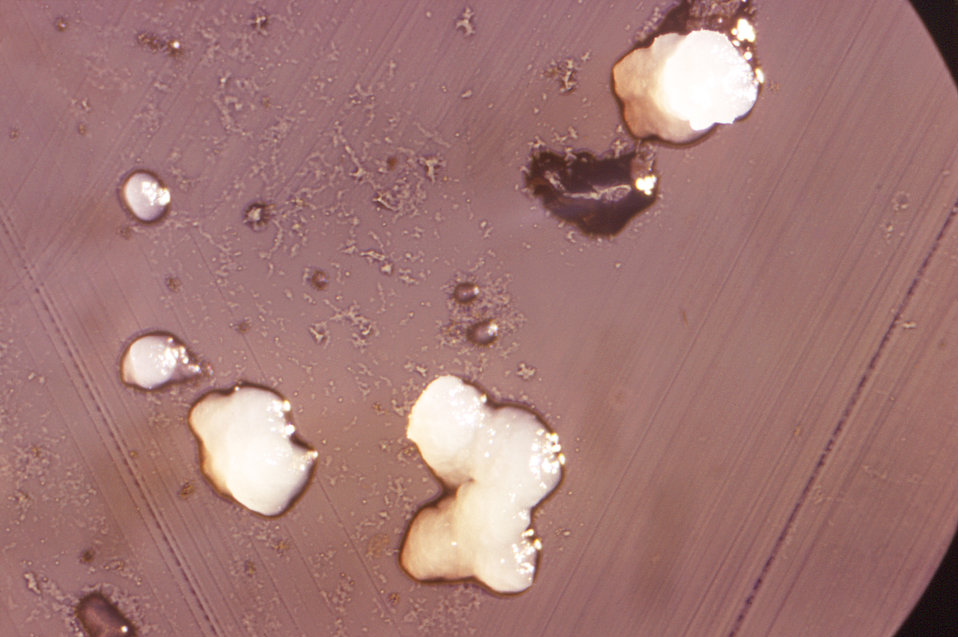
Magnified 12.5X, this image depicts the morphologic characteristics displayed by a number of mature Gram-positive, Actinomyces naeslundi bacterial colonies, of the 'rough' strain, W-1096, which were cultivated on an unknown culture medium.